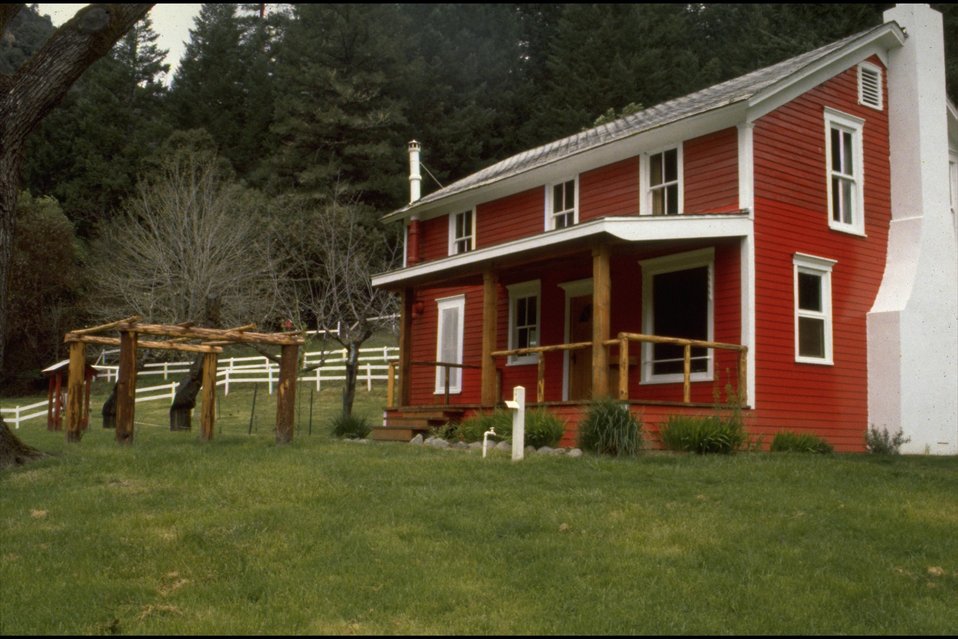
Rogue River Ranch - Main Hous/museum - front and East side.